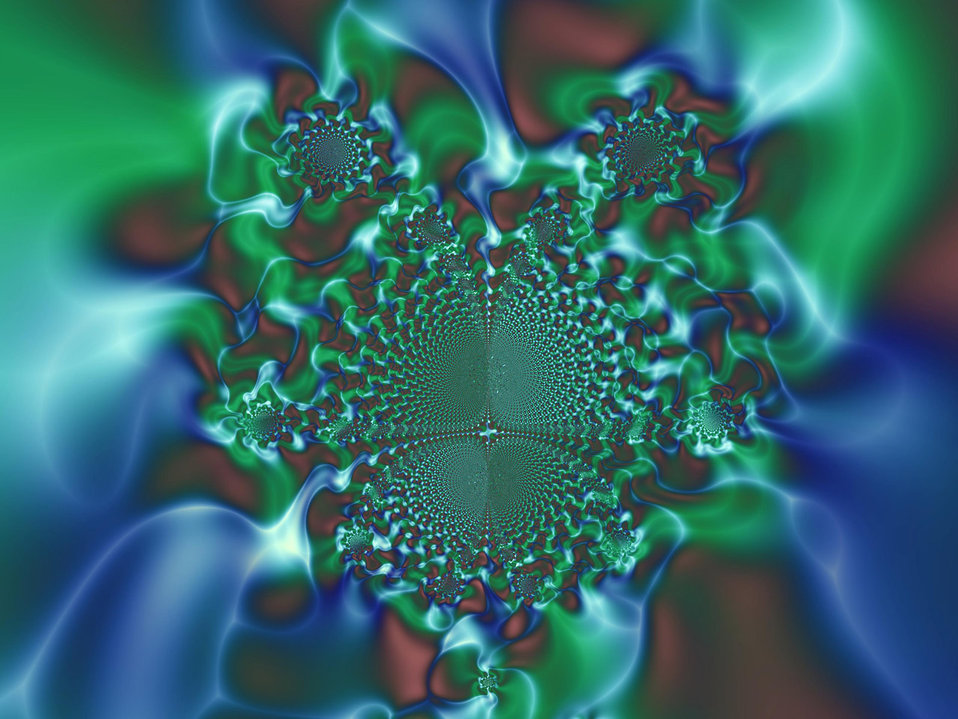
Fractal in blue and green.